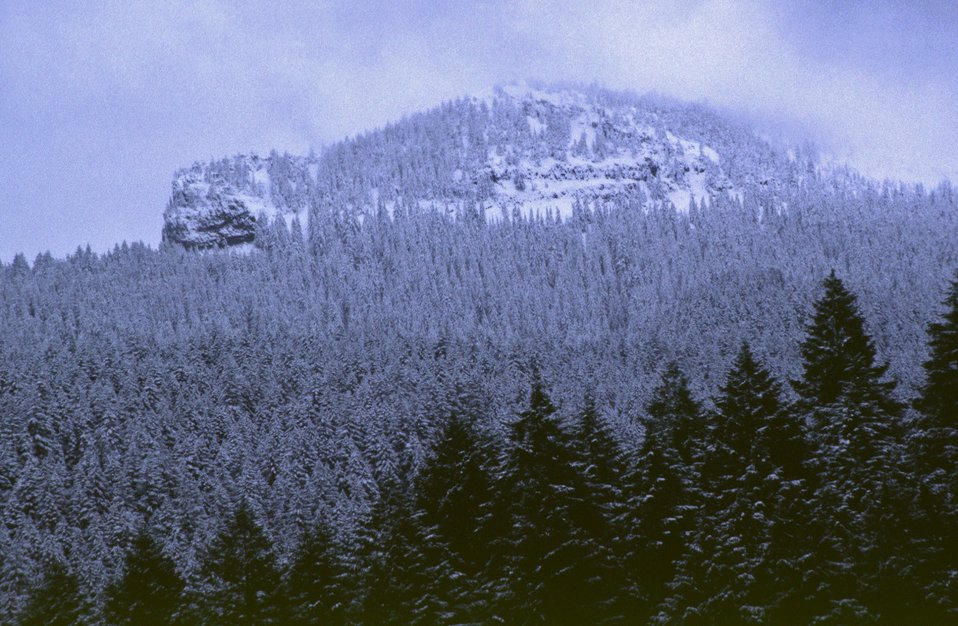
Mid Winter forest scene in the Mollala Corridor.